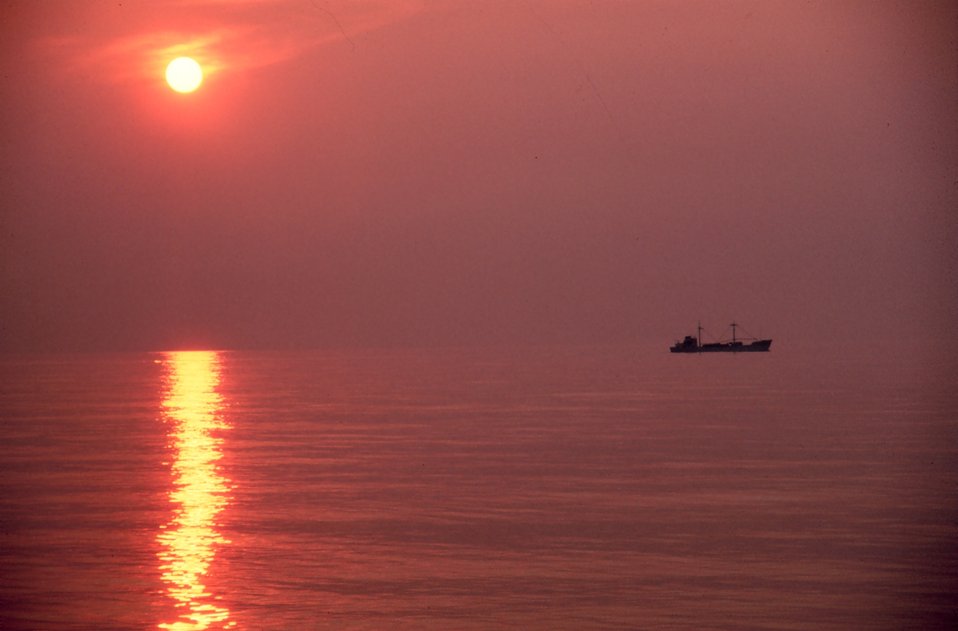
A small coastal freighter plying its way through a placid sea at sunset.